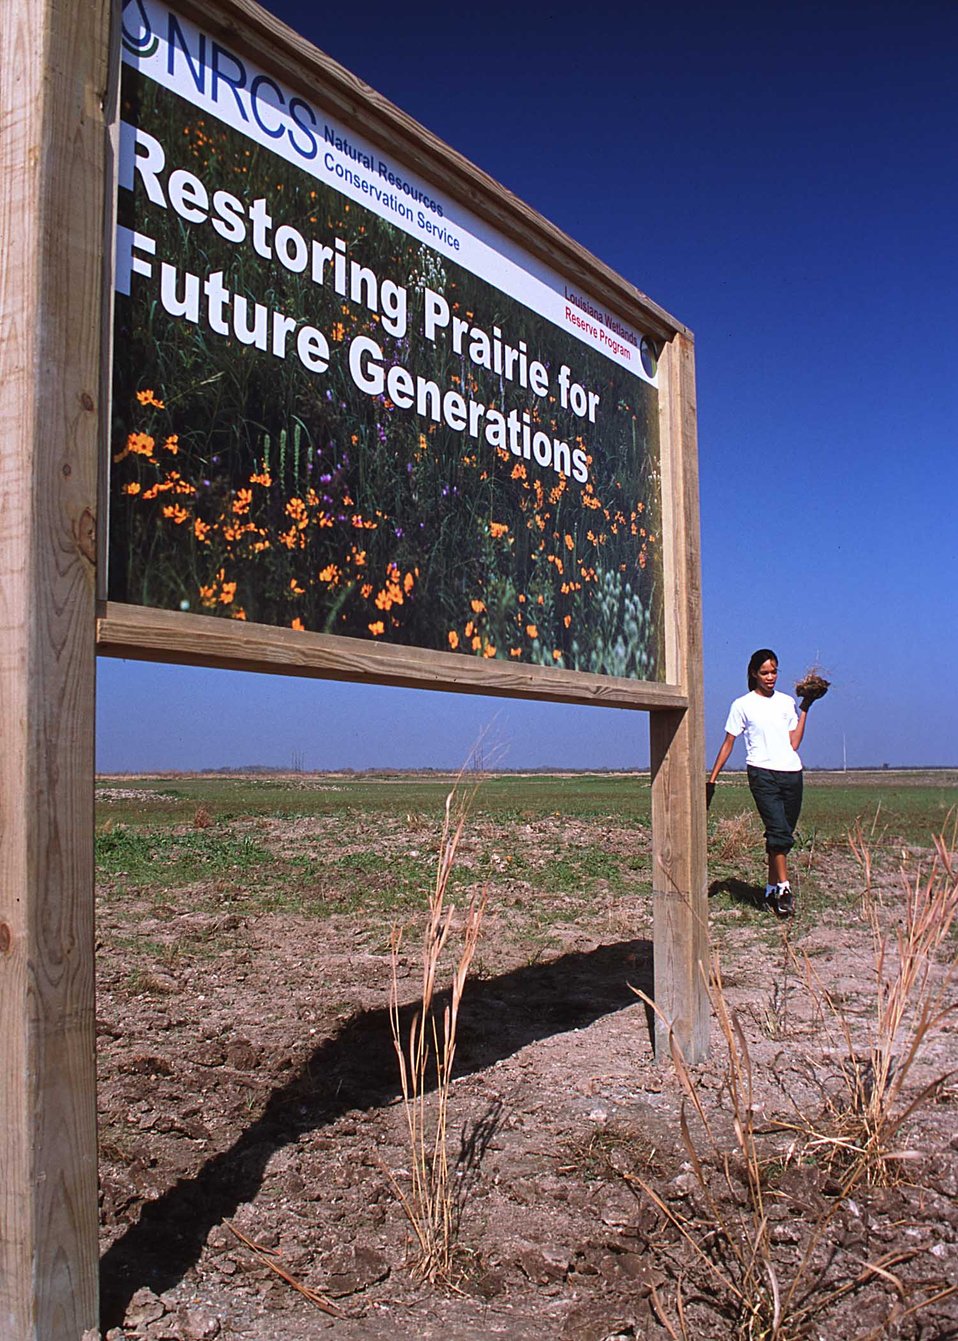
Earth team volunteers of NRCS help transplant native prairie plants from a roadside near Gueydan, Louisiana, to a restored wetland nearby.